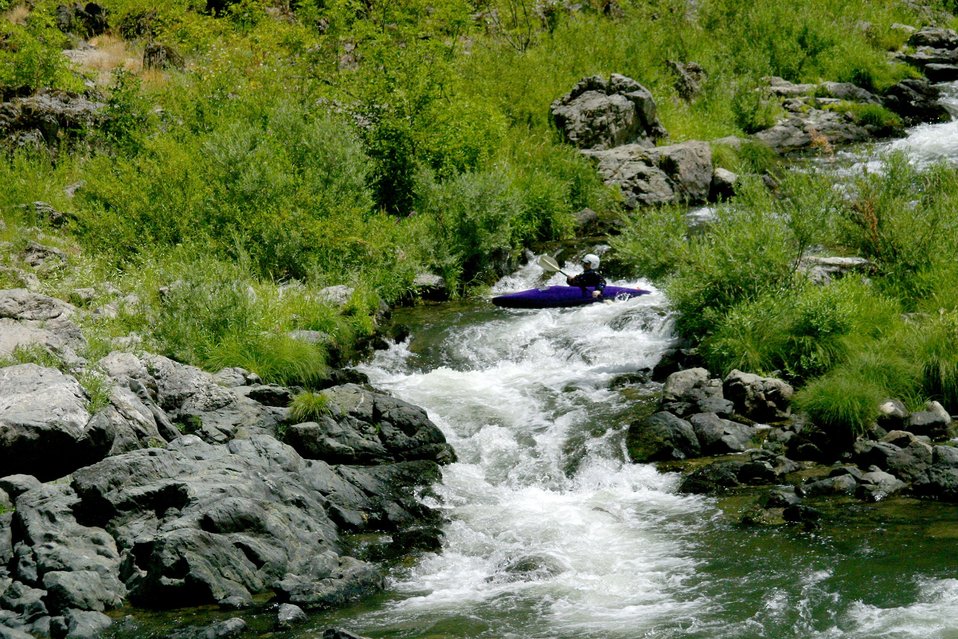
Rainie Falls Fish Ladder